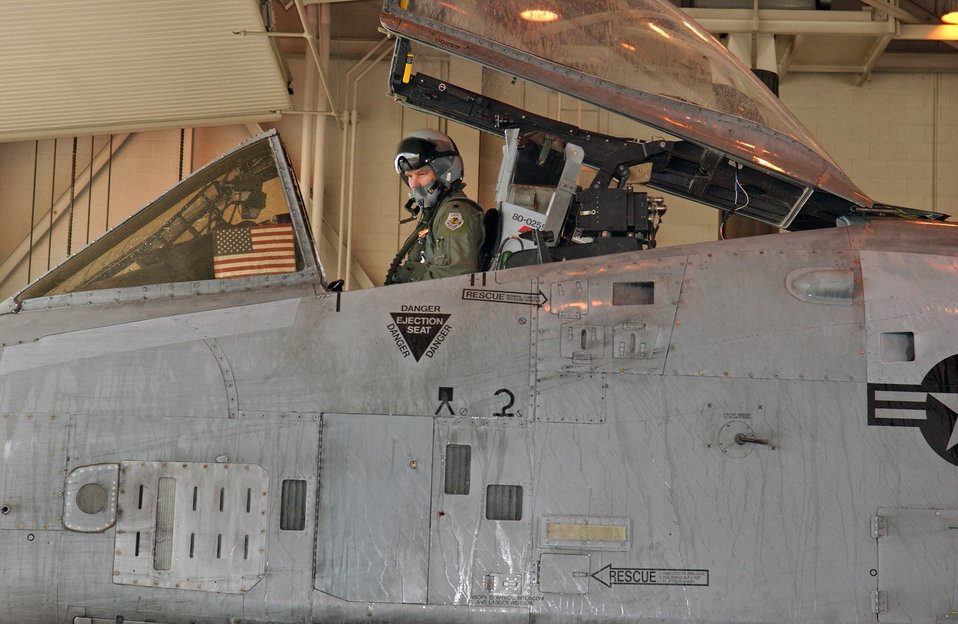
A-10s depart Eielson

Lt. Col. Quentin Rideout prepares to step down from his A-10 Thunderbolt II at Eielson Air Force Base, Alaska, July 31. The first two A-10s arrived at Eielson Dec. 18, 1981; the last two A-10s are set to leave Aug. 15 for Moody AFB, Ga., and Mountain Home AFB, Idaho. Colonel Rideout is the 355th Fighter Squadron commander.